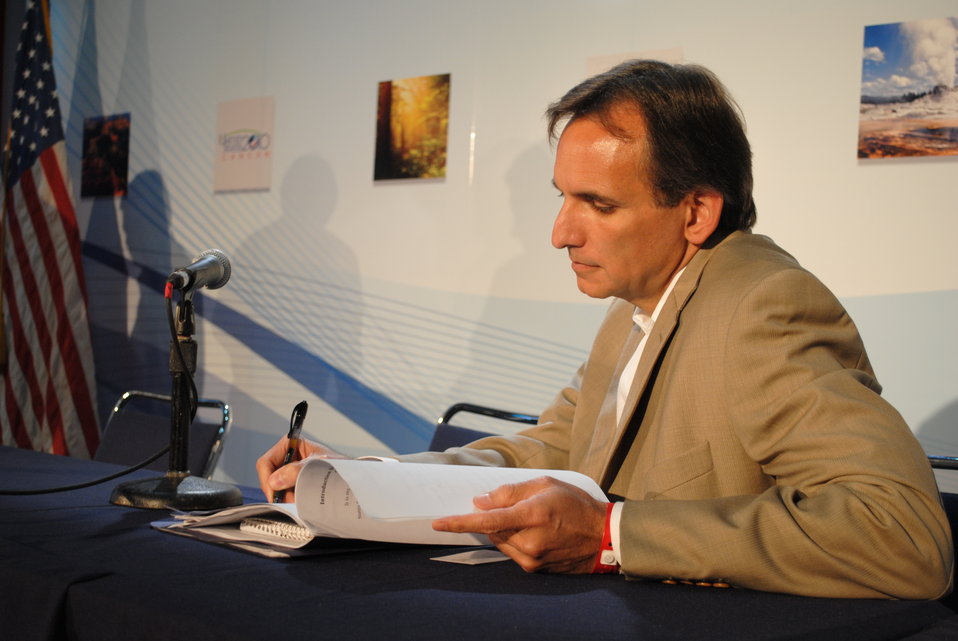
Ambassador Pascual Prepares To Introduce Secretary Chu

U.S. Ambassador to Mexico Carlos Pascual prepares to introduce U.S. Secretary of Energy Steven Chu at the U.S. Center at COP-16 in Cancun, Mexico, on December 6, 2010.